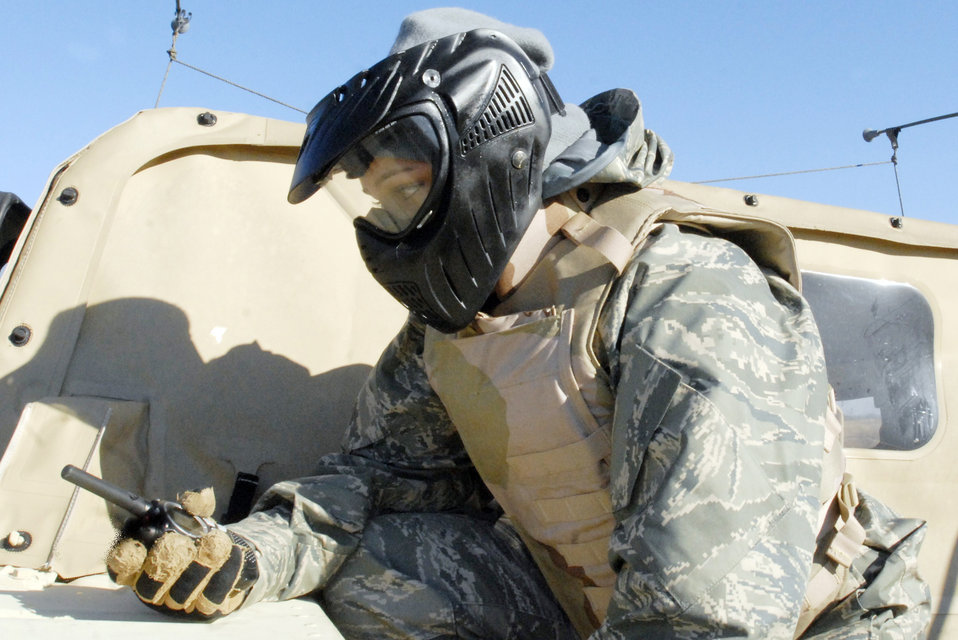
Go ahead, over?

Senior Airman Alyssa Gomez waits for word from her colleagues during Patriot 7 on when to proceed during a reconnaissance mission Dec. 10, 2009, at Fort Pickett, Va. About 30 Air Force, joint and coalition trainees conducted counterterrorism training to learn how to make more dynamic decisions on the battlefield. Airman Gomez is from 99th Security Forces Squadron ground combat at Nellis Air Force Base, Nev.